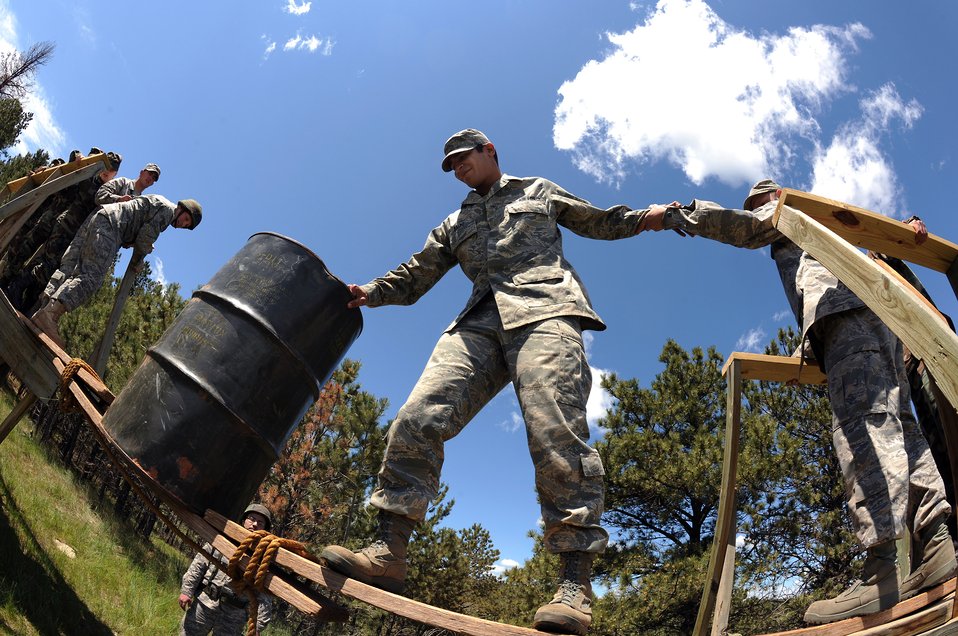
Teamwork is the key

During a Golden Coyote exercise June 9, Airman 1st Class Phillip Baiao moves a barrel across an improvised bridge at Camp Rapid, S.D. The exercise tests engineering and support units at Ellsworth Air Force Base, S.D. to mobilize and deploy their mission.